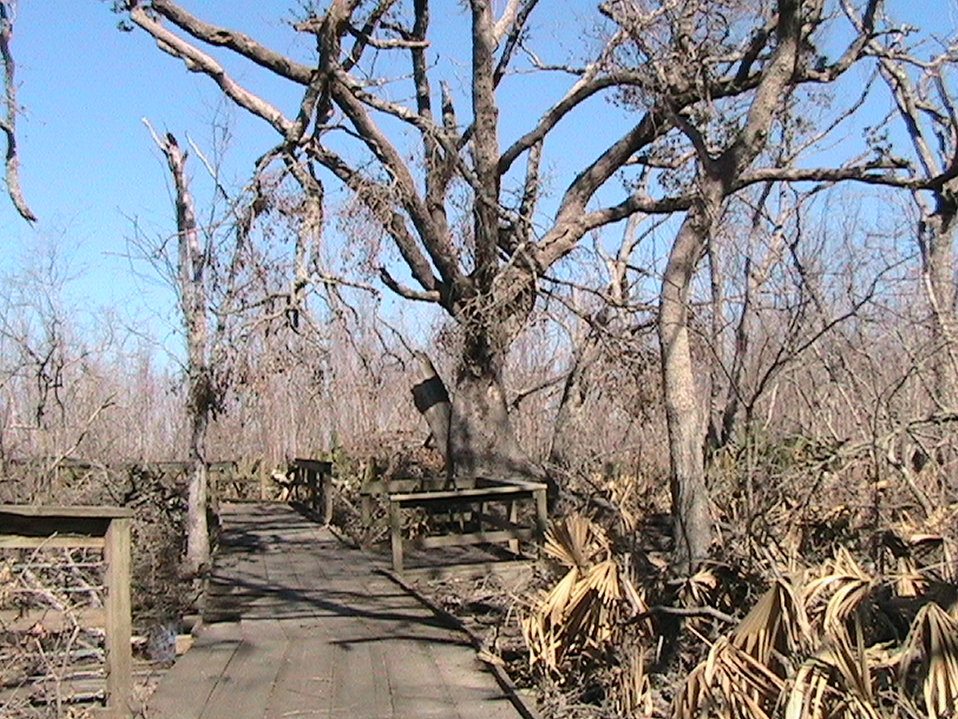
Bayou Sauvage Ridge Trail After Katrina093

Hurricane Katrina delivers damage to the Ridge Trail and the rest of the refuge.